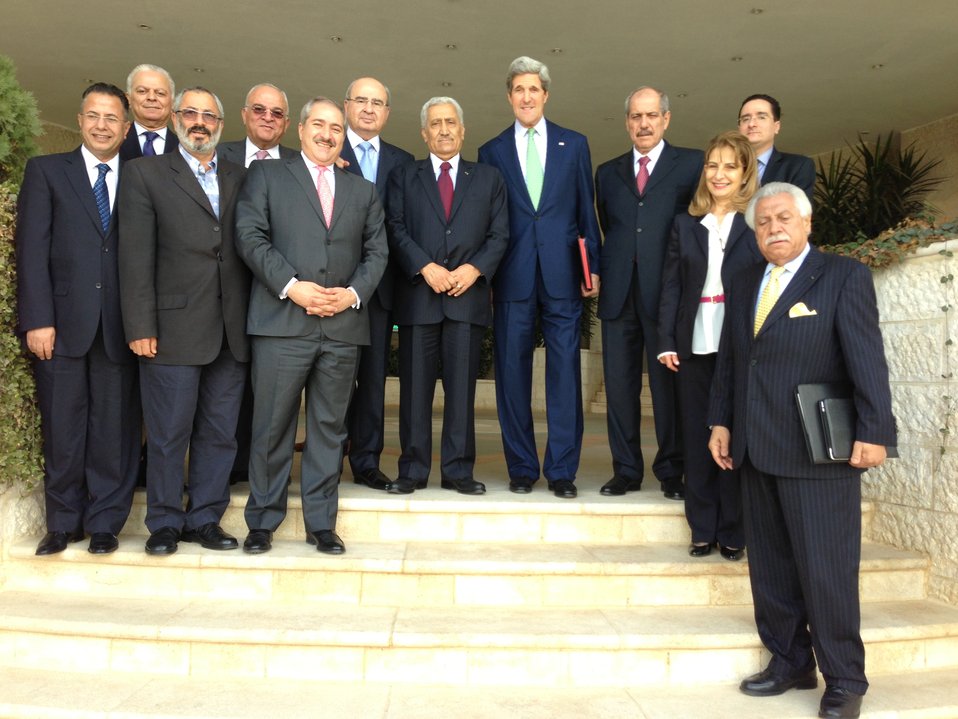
Secretary Kerry and Jordanian Officials Pose for a Group Photo

U.S. Secretary of State John Kerry poses with Jordanian Prime Minister Abdullah Ensour, Foreign Minister Nasser Judeh and other Jordanian government officials after a lunch meeting at the Ministry of Foreign Affairs in Amman on March 23, 2013.